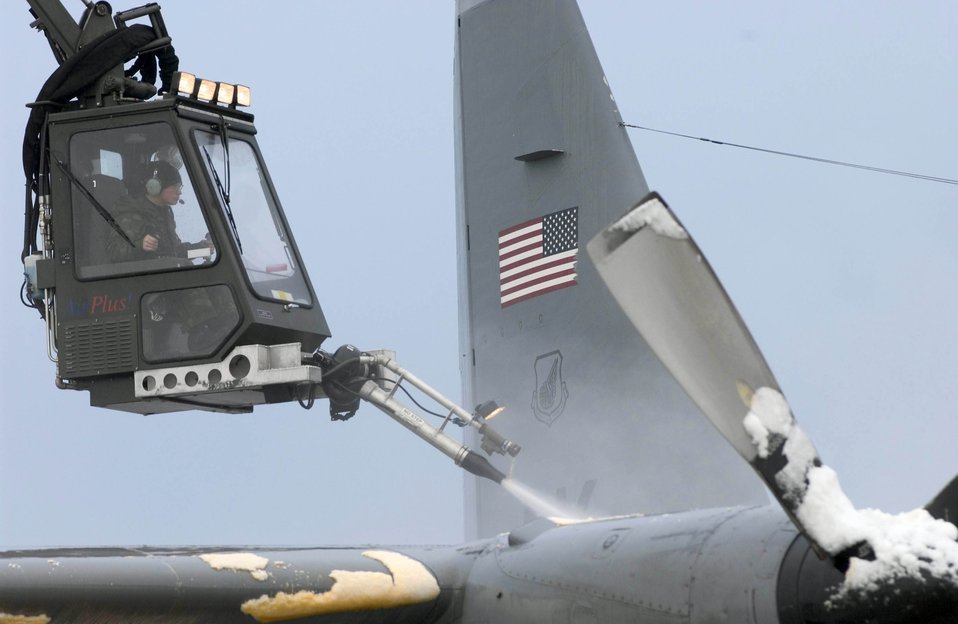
Snow job

RAMSTEIN AIR BASE, Germany (AFPN) -- Staff Sgt. Guy Evans removes snow from a C-130 Hercules here early Nov. 10. A little more than an inch of snow blanketed the area. Glycol, an environmentally safe product, coats aircraft and helps prevent snow from accumulating. Sergeant Evans is a crew chief with the base's 723rd Aircraft Maintenance Squadron.